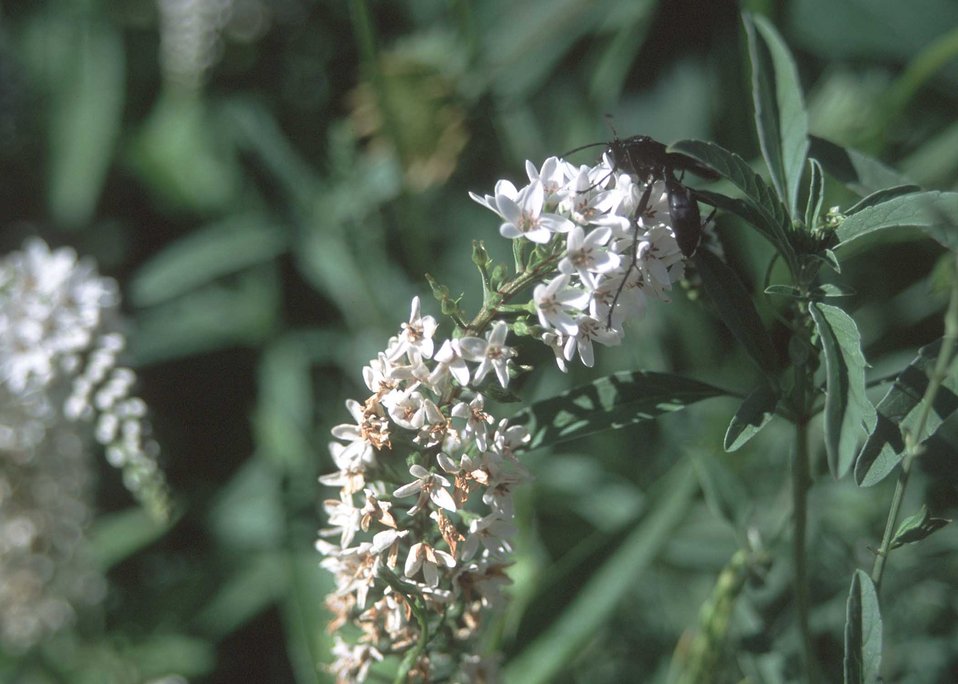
Bee pollinates a plant in a prairie planting in a backyard in Urbandale, Iowa.